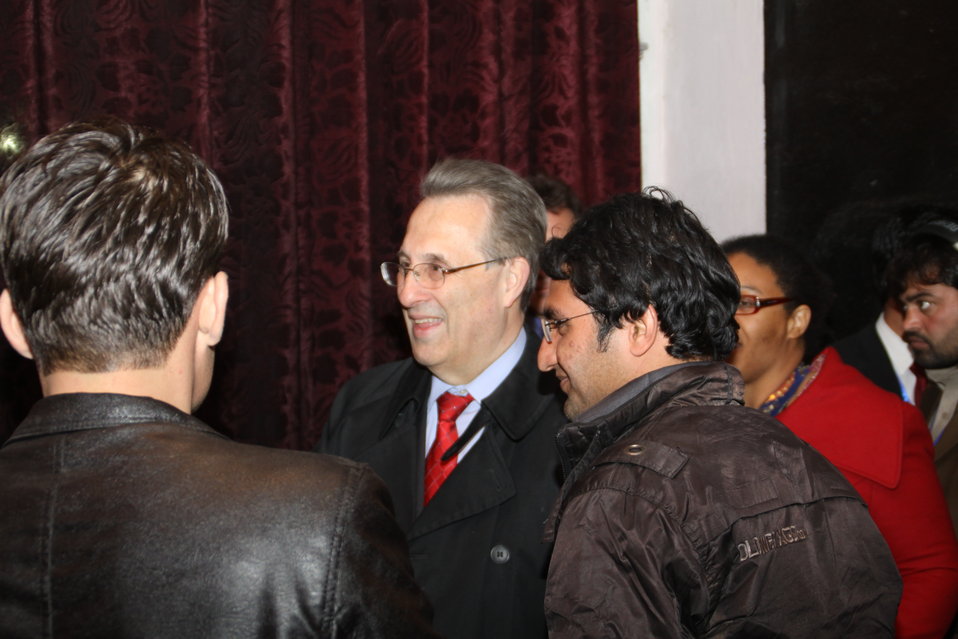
U.S. Ambassador E. Anthony Wayne